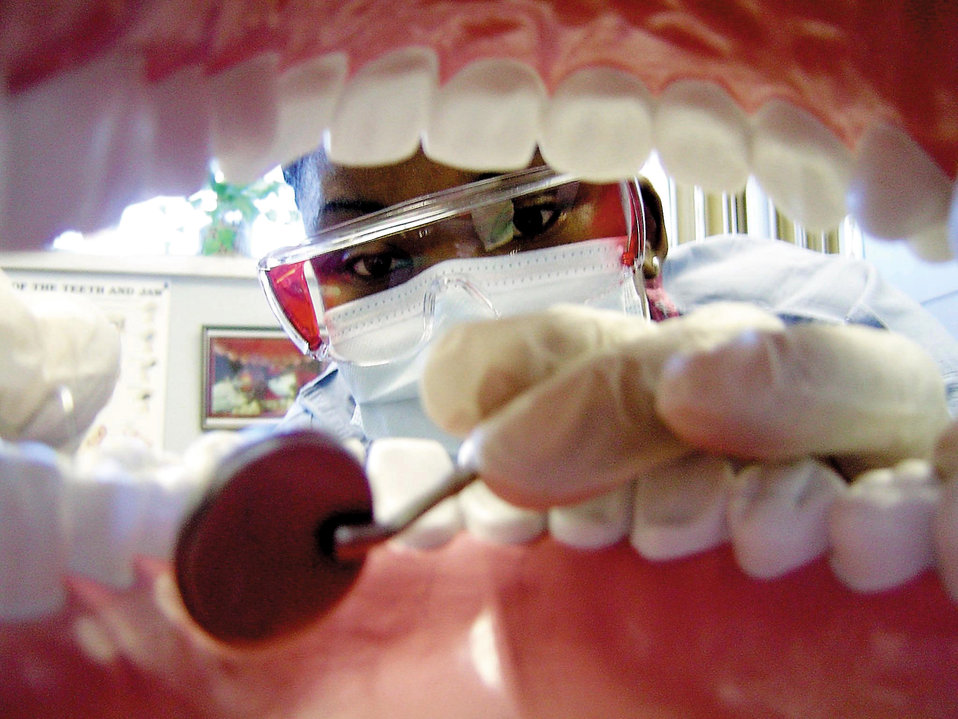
Dental health

POPE AIR FORCE BASE, N.C. (AFPN) -- To mark Children's Dental Health Month, Staff Sgt. Lakeisha Thomas performs a simulated teeth cleaning. The process keeps and promotes healthy oral hygiene. Every year during Children's Dental Health Month, the 43rd Medical Dental Operations Squadron visits the child development center here to give free gifts to children. They also conduct a presentation to educate children about the importance of oral hygiene. Sergeant Thomas is assigned to the 43rd MDOS.